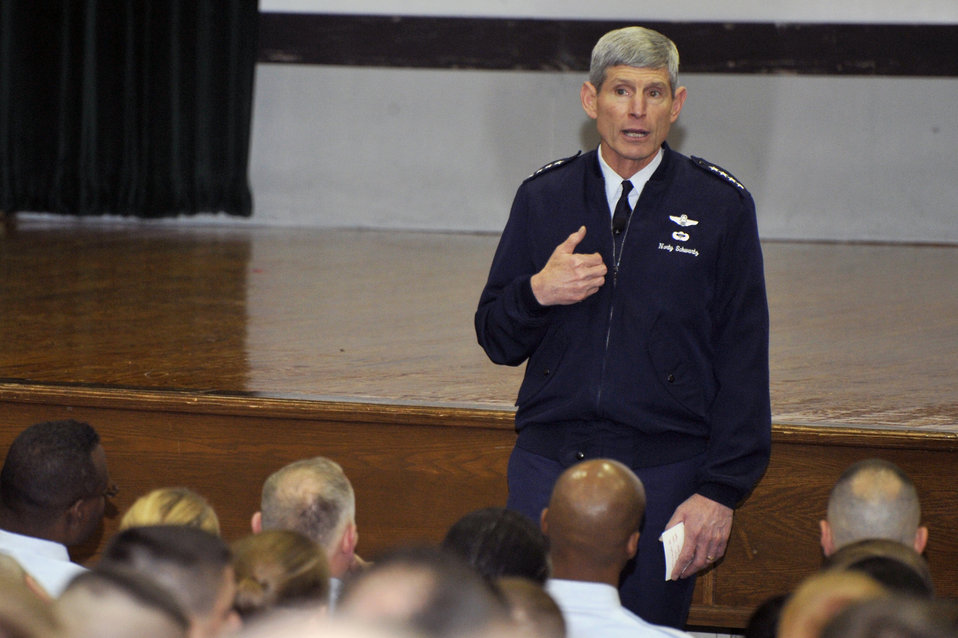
CSAF addresses key Air Force issues at JB Andrews

Air Force Chief of Staff Gen. Norton Schwartz speaks to Airmen Nov. 1, 2011, at Joint Base Andrews, Md. During the chief of staff call, Schwartz spoke about leadership, current Air Force issues and answered questions from the audience.